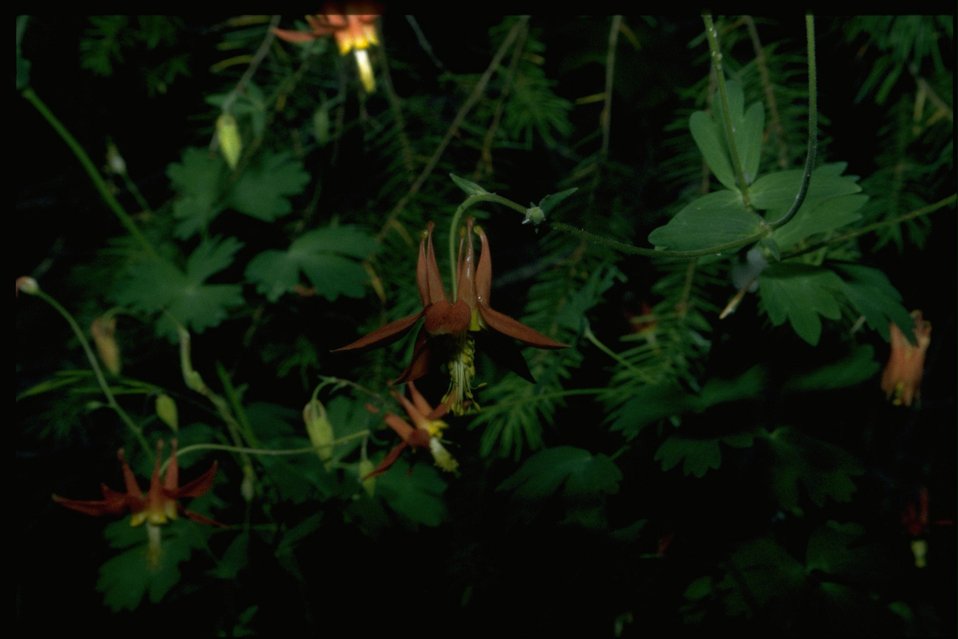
Medium shot of Aquilegia formosa.